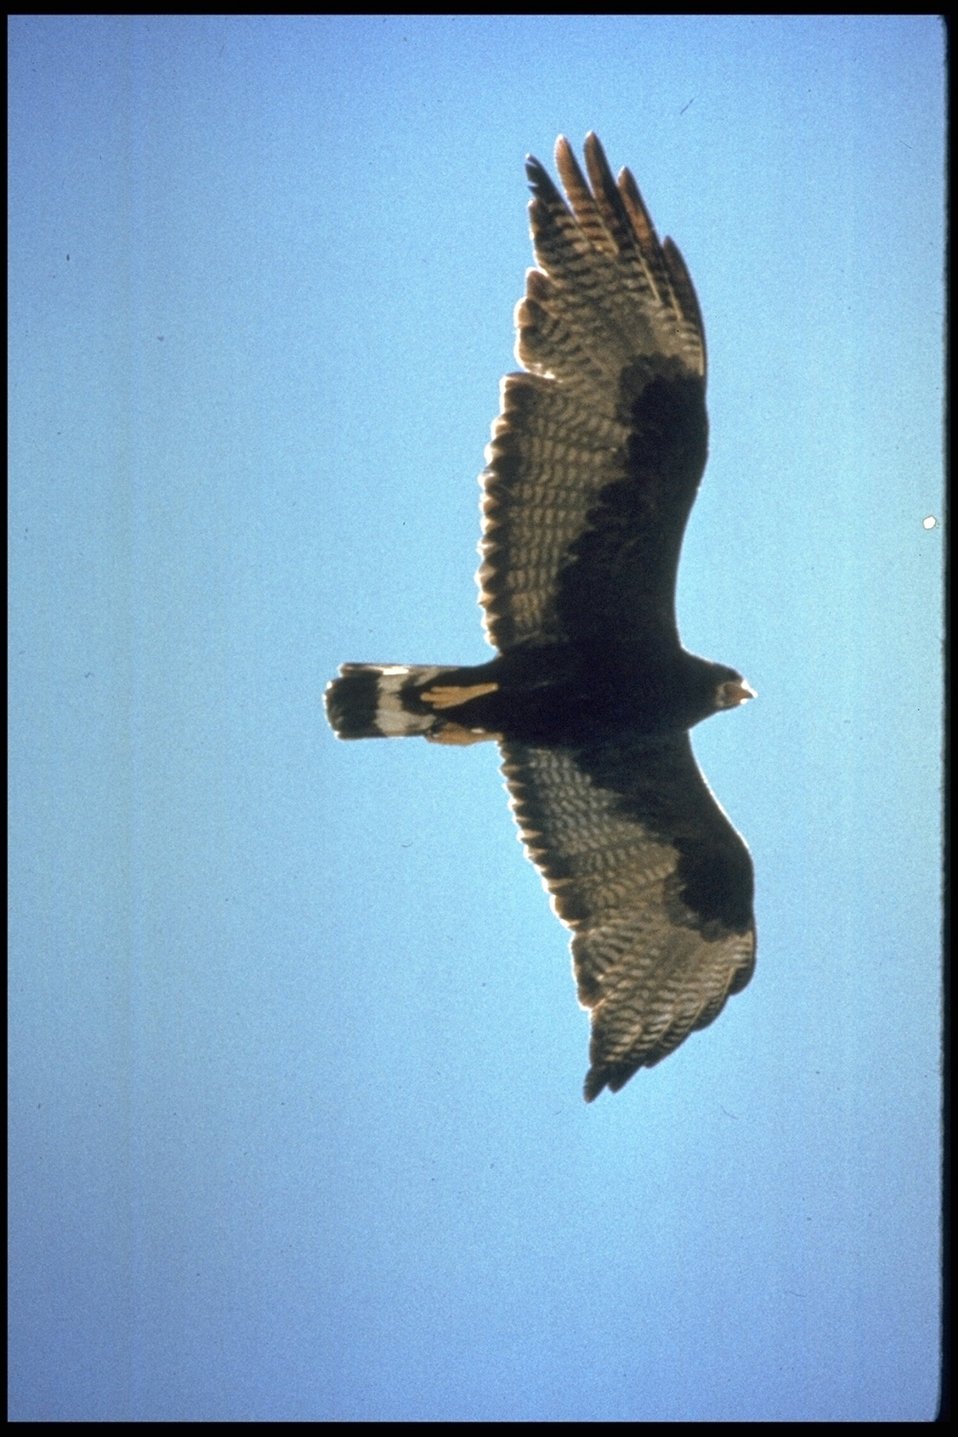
Arizona's flying wildlife.